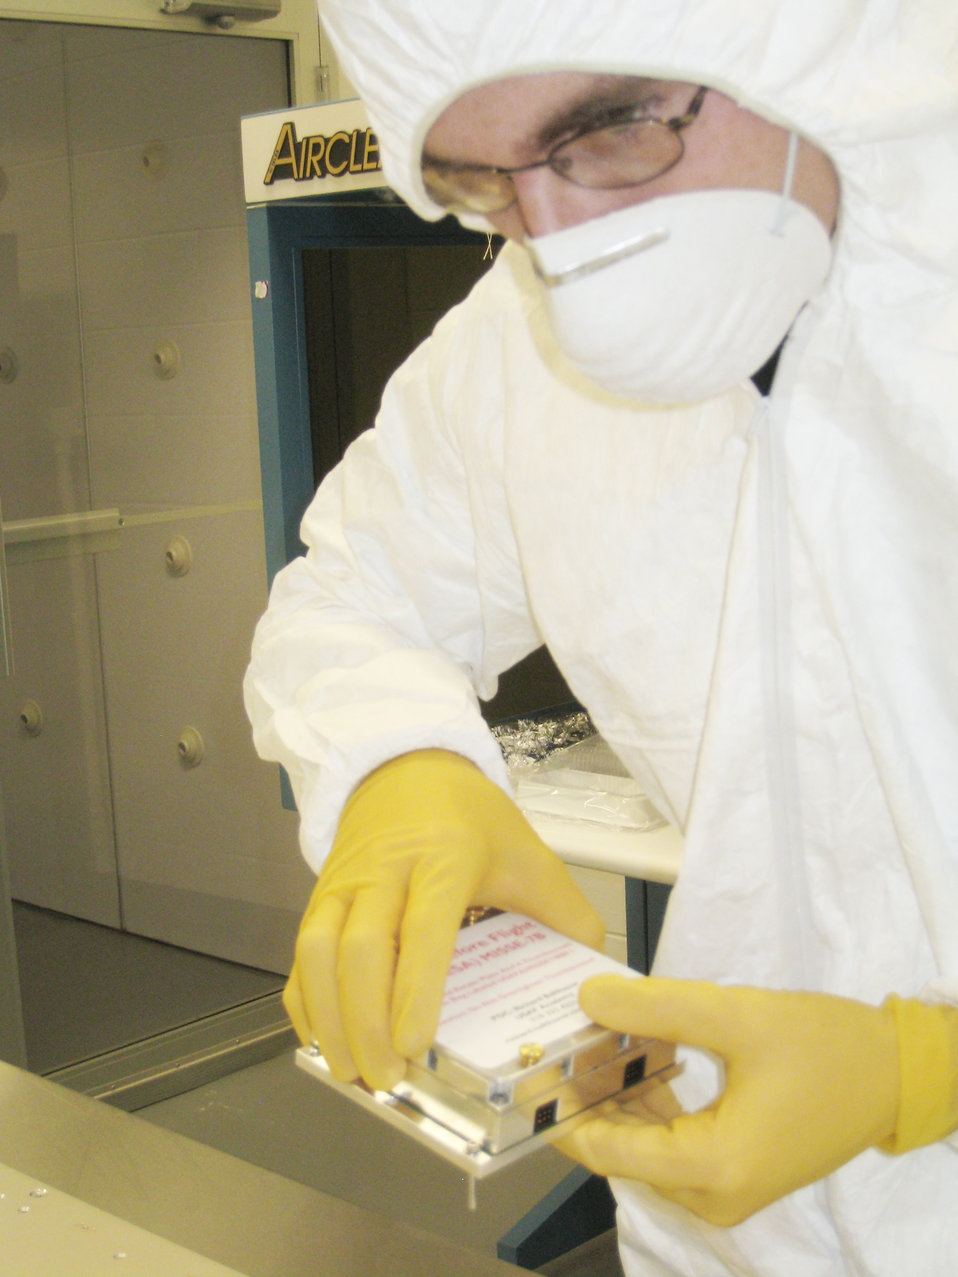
Acadamy space weather experiment heads into space

A U.S. Air Force Academy space weather experiment heads for the International Space Station aboard the Space Shuttle Atlantis after the shuttle lifted off at at 2:28 p.m. EST Nov. 16, 2009, from Cape Canaveral Air Force Station, Fla. The Academy's Integrated Miniaturized Electrostatic Analyzer is a rugged, smart-skin sensor measuring plasma density, temperature and spacecraft charging as part of the Materials International Space Station Experiment 7.